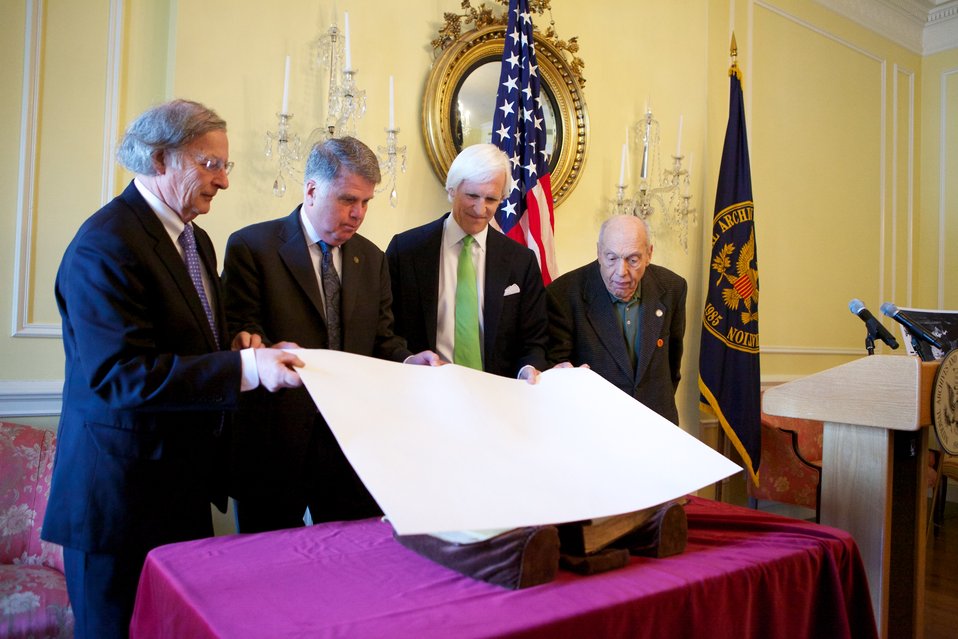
Hitler Album Donation Event